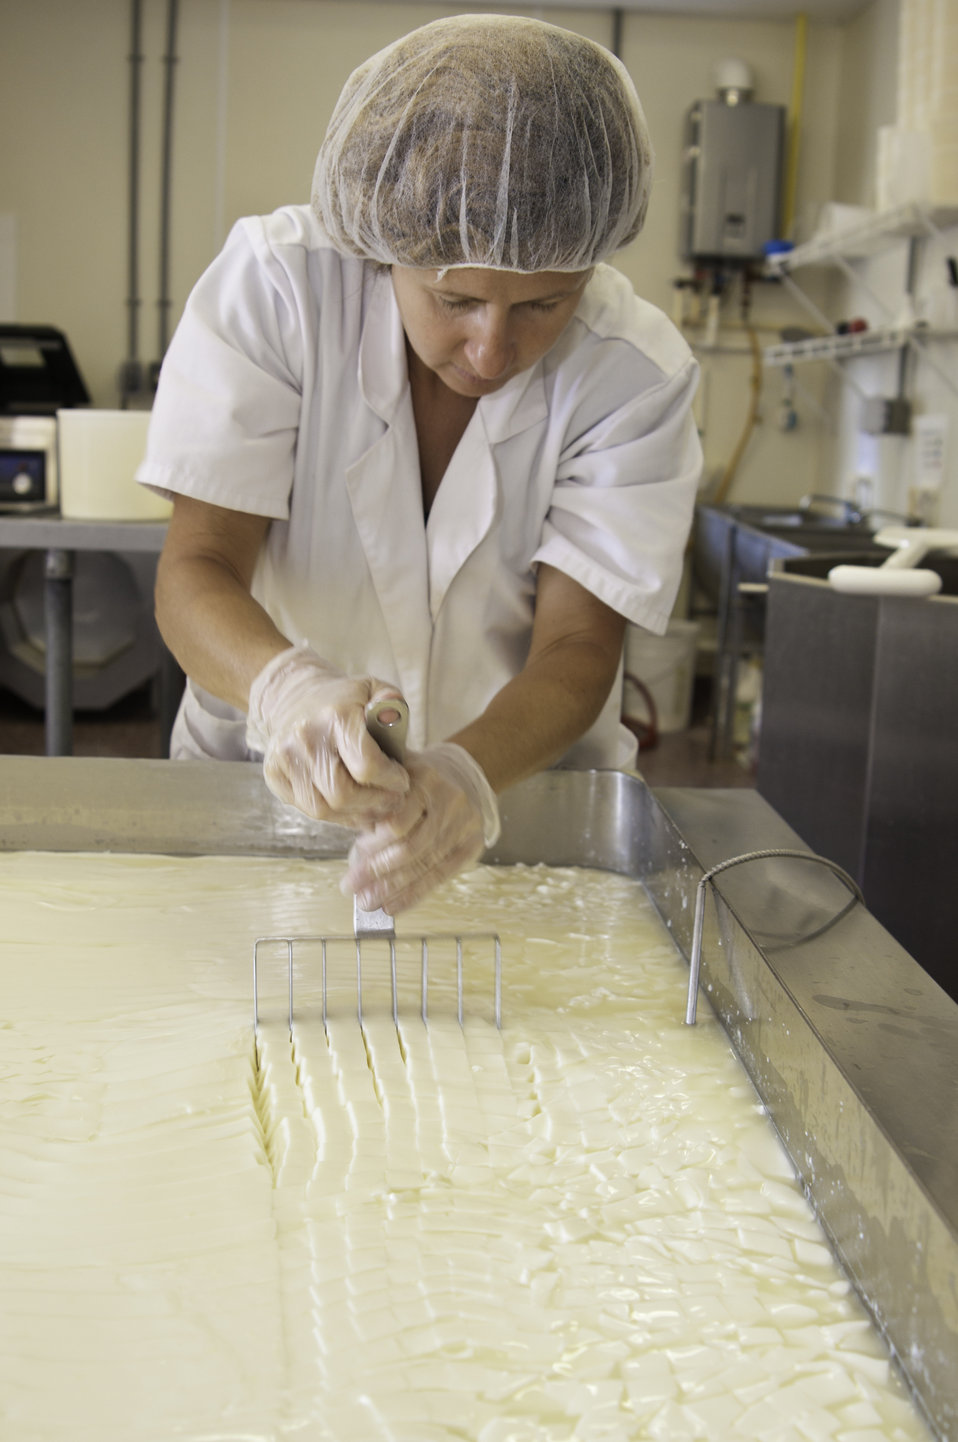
Chapel’s Country Creamery owner Holly Foster in Easton, MD cuts the milk curd with a curd knife in small cubes. Timing is everything in this step. Then the curds are cooked and stirred in the whey that was expelled in the cutting process. The dairy uses fresh raw milk 12-24 hours old. The milk is all-natural and contains no synthetic hormones, antibiotics, or chemical compounds. The 1150 pounds of milk in the vat will be used to make the dairy’s “Bay Blue” Cheese.